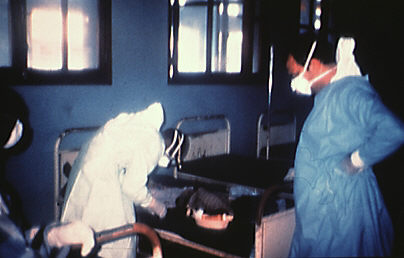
Zairian and CDC clinicians care for a patient with Ebola VHF in the Kikwit General Hospital in Zaire, 1995.